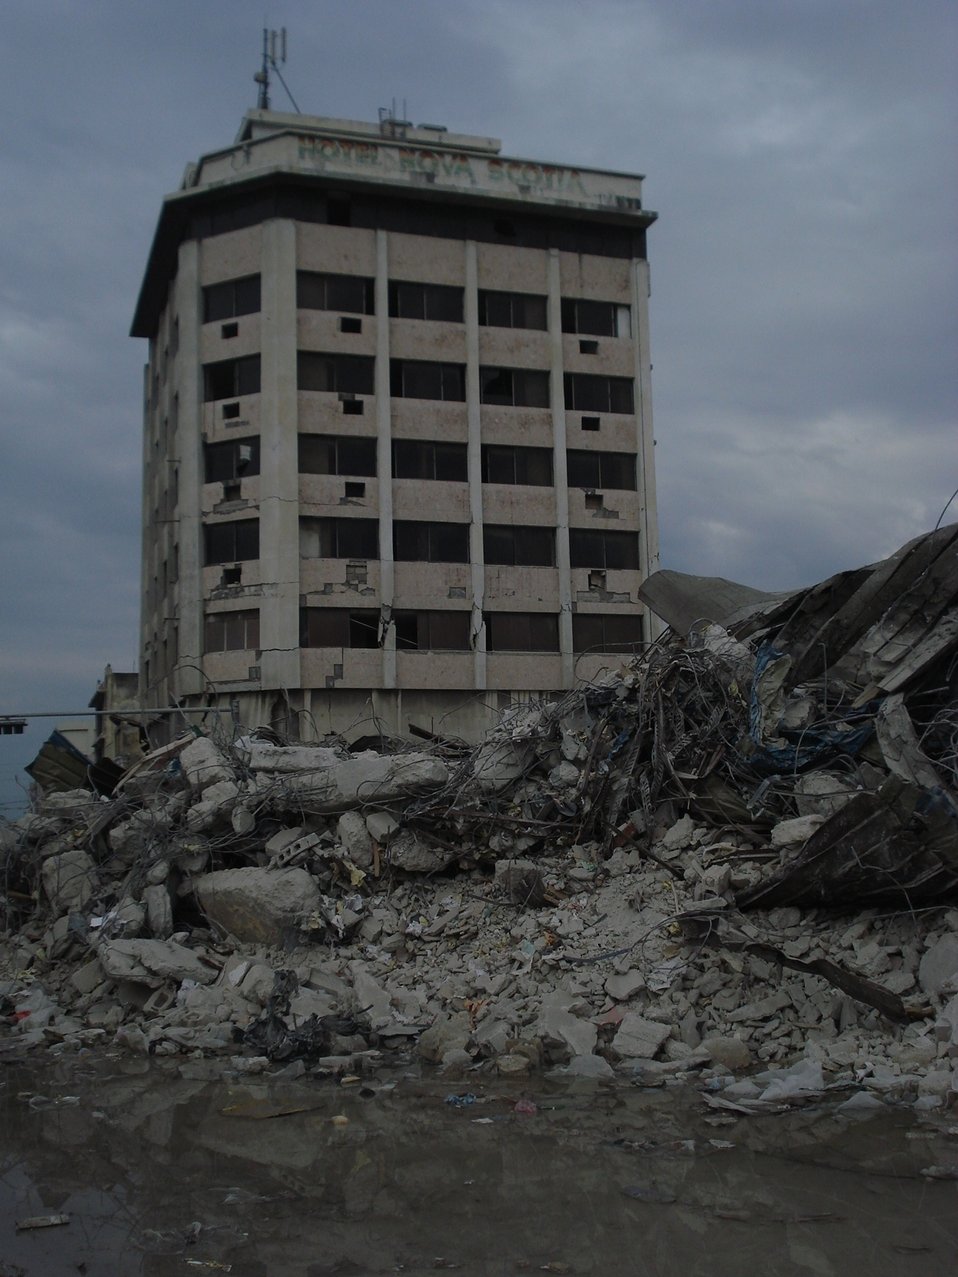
Teleco Building (Haiti Earthquake - 2010)

Photos shot by team sent by the FCC to assist communications recovery in Haiti. Photos shot by team sent by the FCC to assist communications recovery in Haiti.